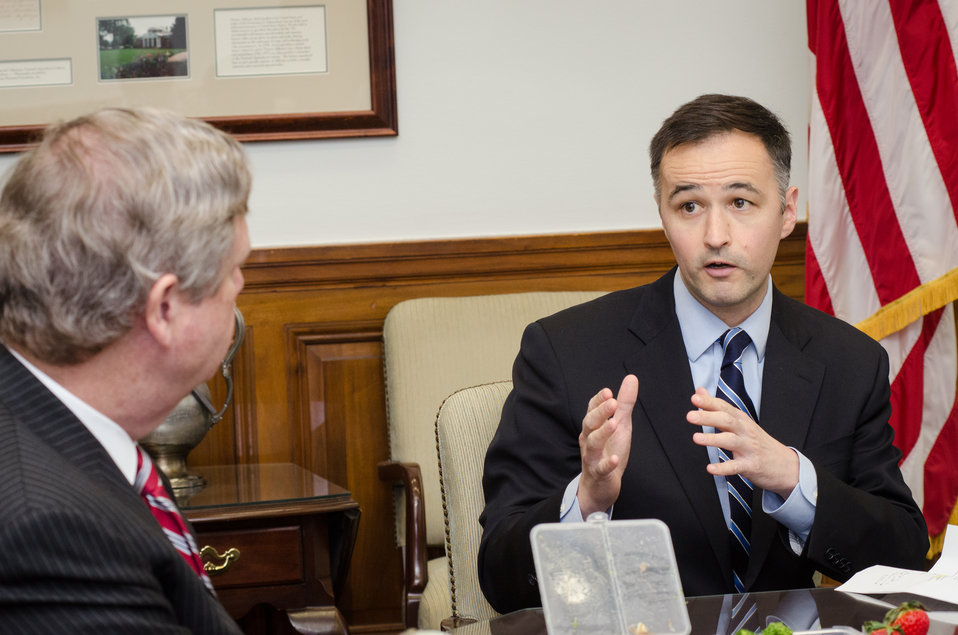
U.S. Department of Agriculture (USDA) Foreign Agricultural Service (FAS) Senior Advisor Patrick Kerrigan, center, talks about his role in the department as Agriculture Secretary Tom Vilsack, left, listens, during a Brown Bag Lunch that he periodically has with employees, in his conference room, on Tuesday, April 9, 2013, in Washington, D.C.